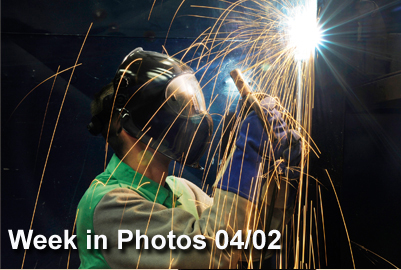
Week in Photos

Air Force Week in Photos for April 2, 2010, highlights photos from around the Air Force. In this photo by James Bowman, Airman 1st Class James Moreland welds a vertical arc at the Aircraft Metals Technology Shop March 30, 2010, on Joint Base Charleston, S.C.